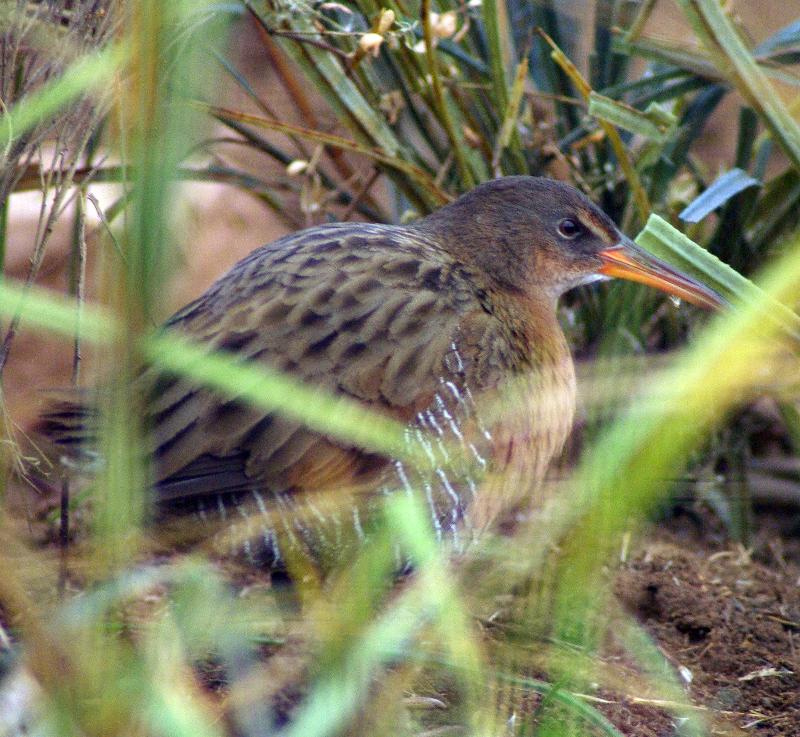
Light-footed clapper rail

Tijuana Slough National Wildlife Refuge/USFWS